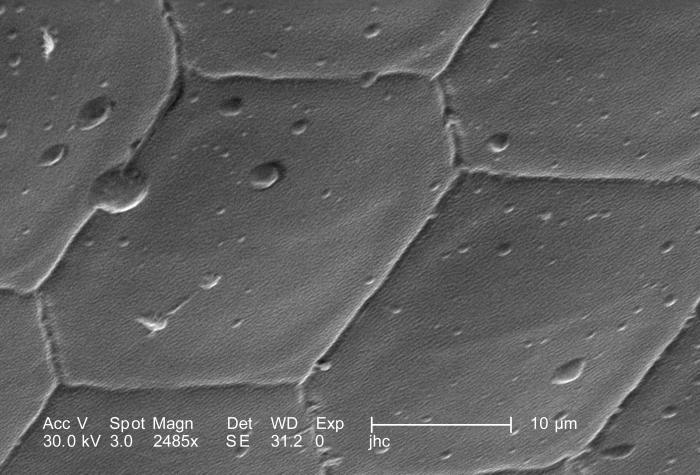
Under a high magnification of 2485X, which is 32X greater than PHIL 10118, this scanning electron micrograph (SEM) depicted the surface of the left compound eye of an unidentified hornet found in the suburbs of Decatur, Georgia. This eye was one of a pair, which along with other sensorial structures such as the hornet's antennae, and hair-like 'setae', provided the hornet with data indicative of changes encountered in its environment such as chemical, thermal, and tactile queues.